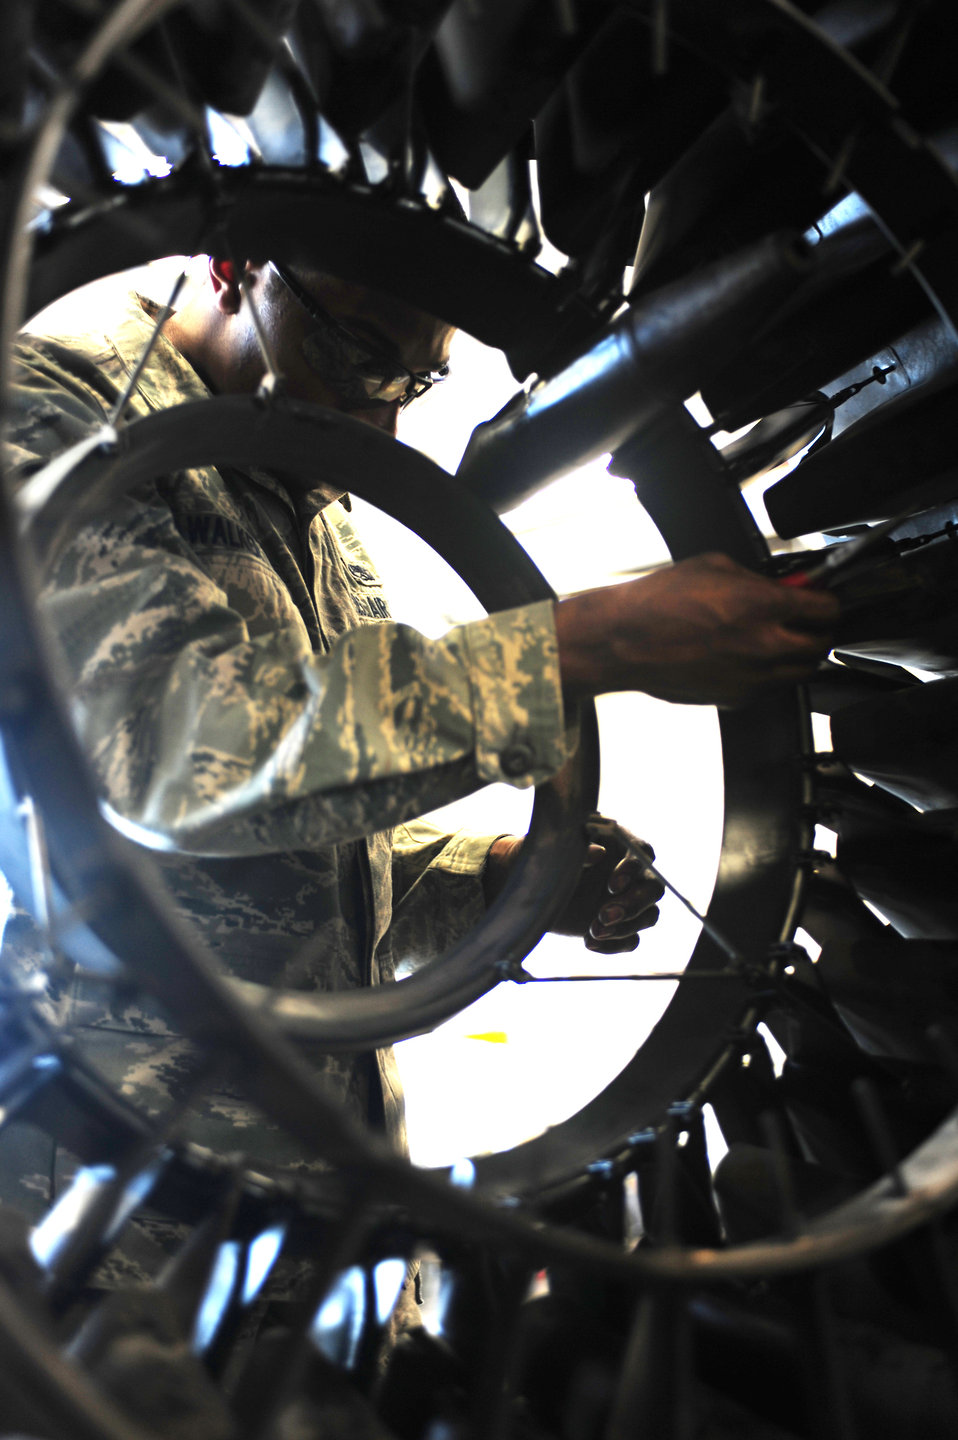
Round and round

Airmen 1st Class Kymric Walker removes S-pins inside the augmenter flame holder from a B-1B Lancer engine, Feb 3, 2010, at Ellsworth Air Force Base, S.D. Airman Walker is with the 28th Maintenance Squadron.